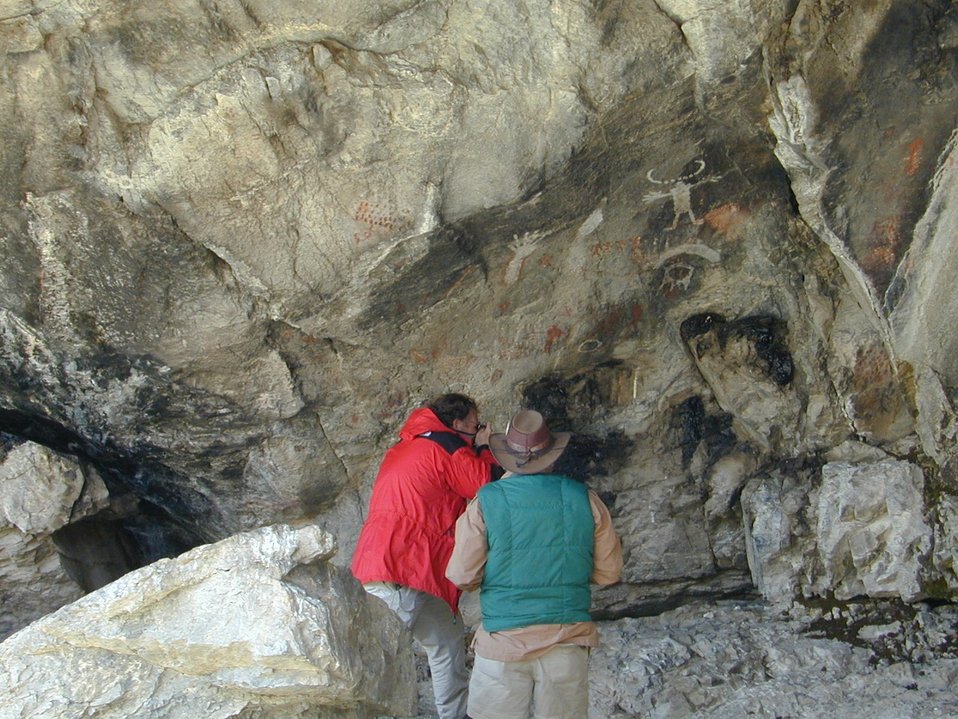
Birch Creek Valley Salmon Field Office Upper Columbia-Salmon Clearwater District